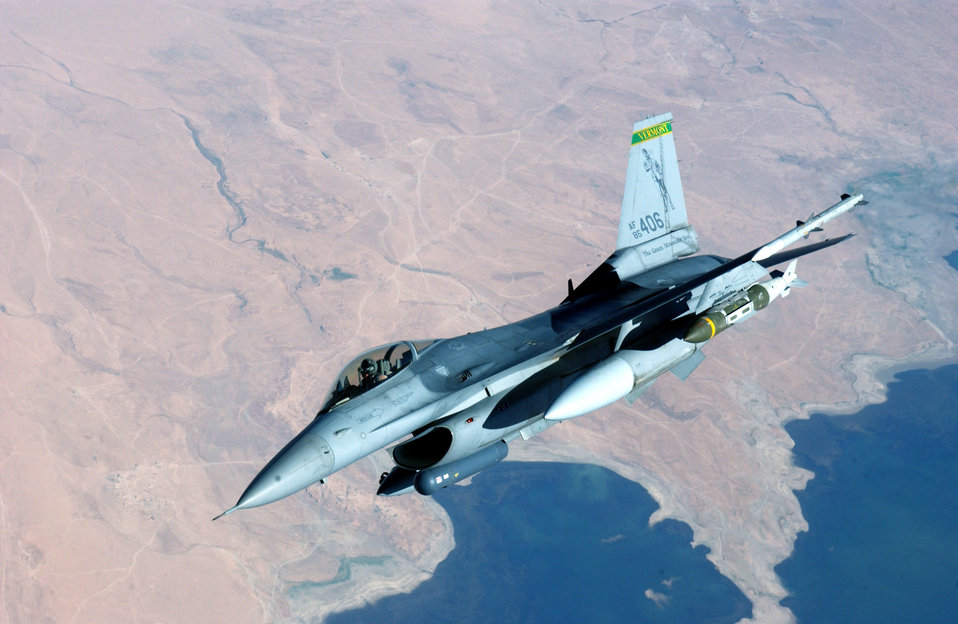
Gas 'n go

SOUTHWEST ASIA -- An F-16 Fighting Falcon banks during a mission Aug. 16. The F-16 is from the 332nd Air Expeditionary Wing at Balad Air Base, Iraq.